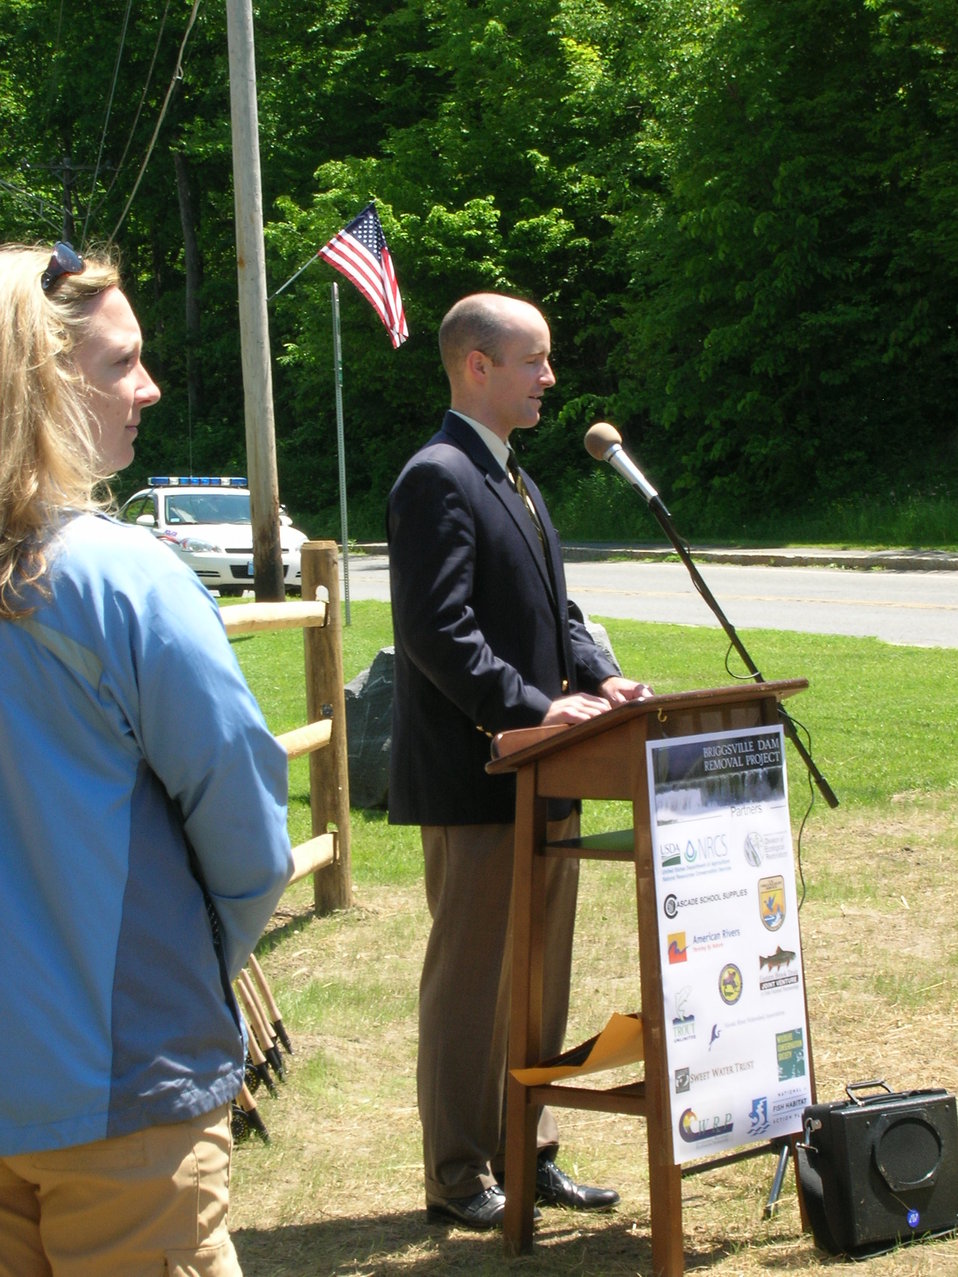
Briggsville Dam Removal Celebration